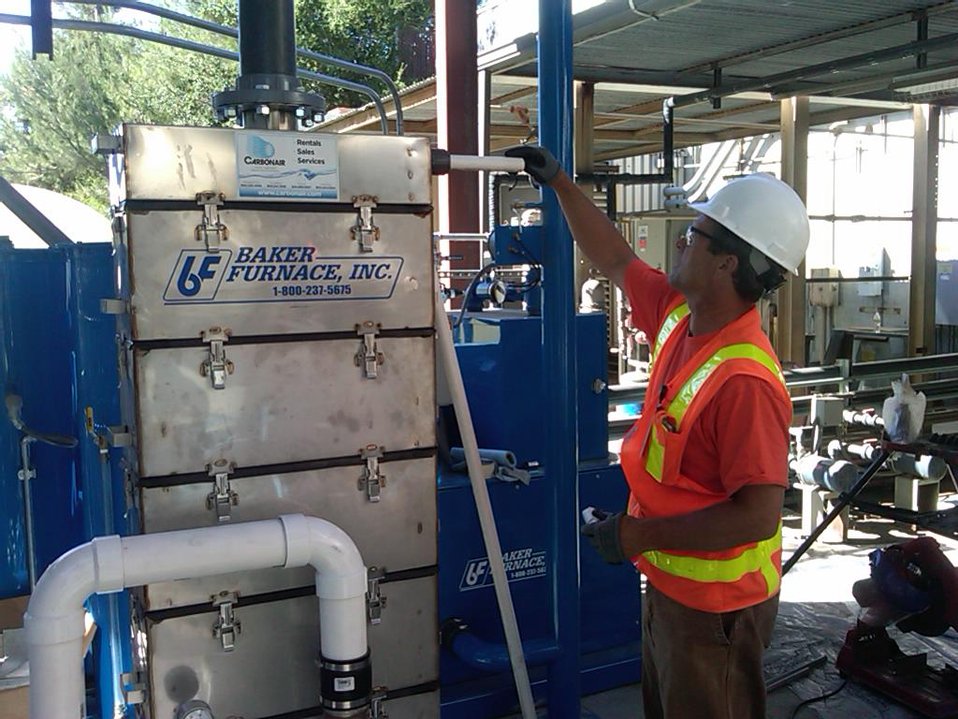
Recovery Act Supports Soil and Debris Cleanup, Groundwater Treatment at SLAC

Recovery Act workers are on track to remove more than 30,000 cubic yards of contaminated soil and debris at the SLAC National Accelerator Laboratory by September 2011.
The Recovery Act invested $14.3 million in legacy cleanup activities at SLAC. In addition to removing contaminated soil and debris that is shipped to local disposal facilities, Recovery Act workers installed three new groundwater treatment systems.